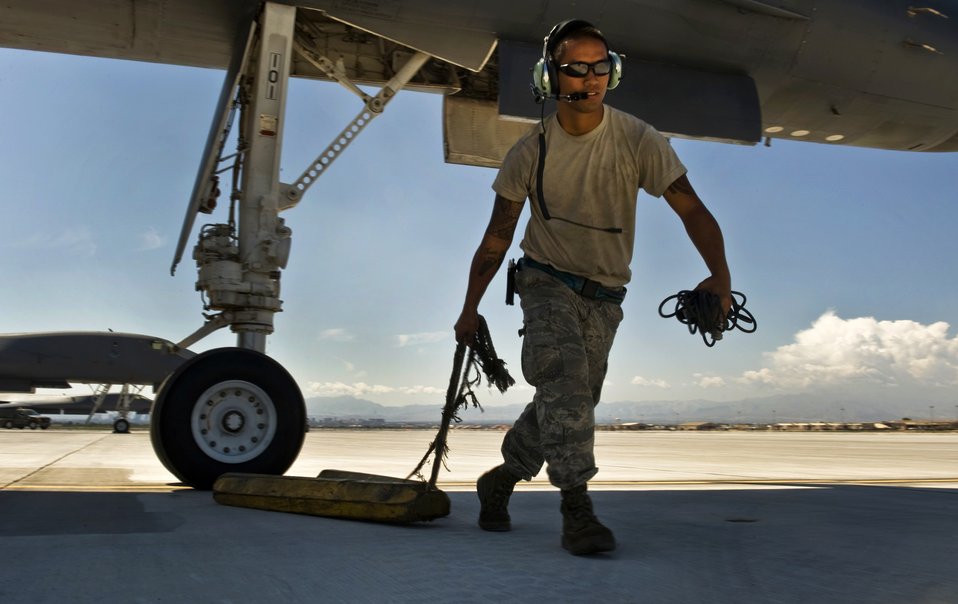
Pull chalks

Airman 1st Class Oscar Masga pulls the chalks out from a B-1B Lancer before a training mission during Green Flag-West 11-10 Sept. 15, 2011, at Nellis Air Force Base, Nev. Green Flag-West provides a realistic close-air support training environment for forces preparing to support world-wide combat operations. Masga is a 7th Aircraft Maintenance Squadron crew chief at Dyess AFB, Texas.